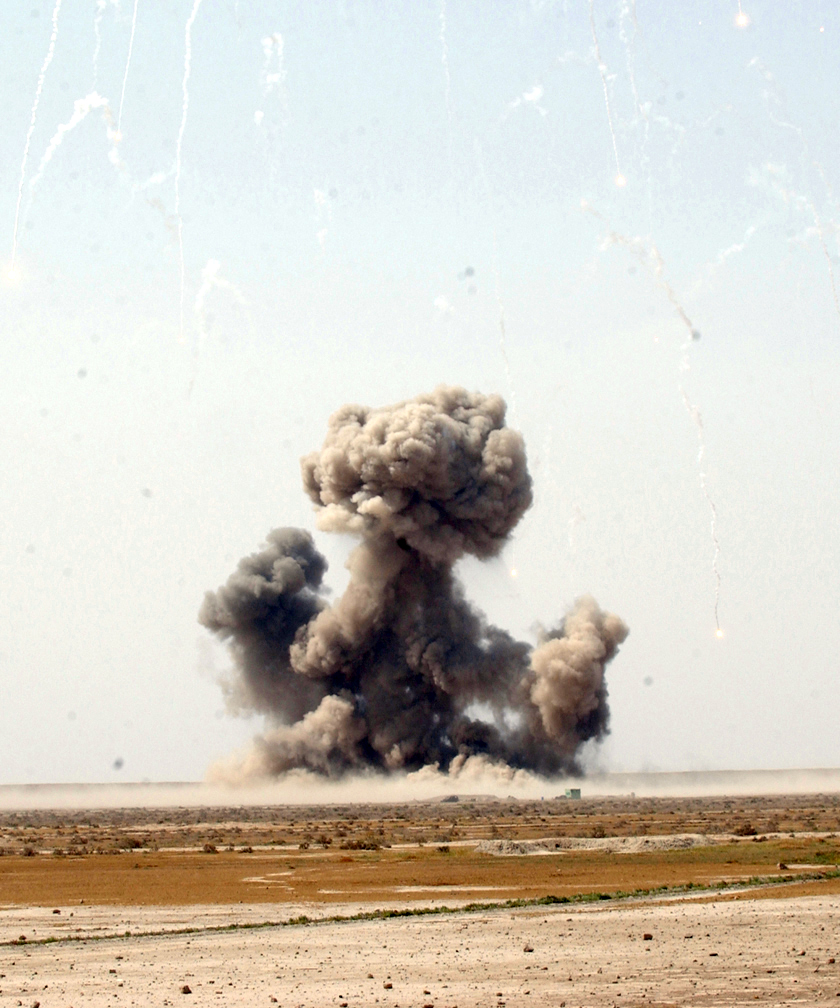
Destroying UXOs

TALLIL AIR BASE, Iraq -- Explosive ordnance disposal experts destroy a cache of explosives. Airmen systematically sweep the entire base to eliminate all unexploded ordnance and defeat improvised explosive devices. Nearly 350,000 items have been destroyed here.